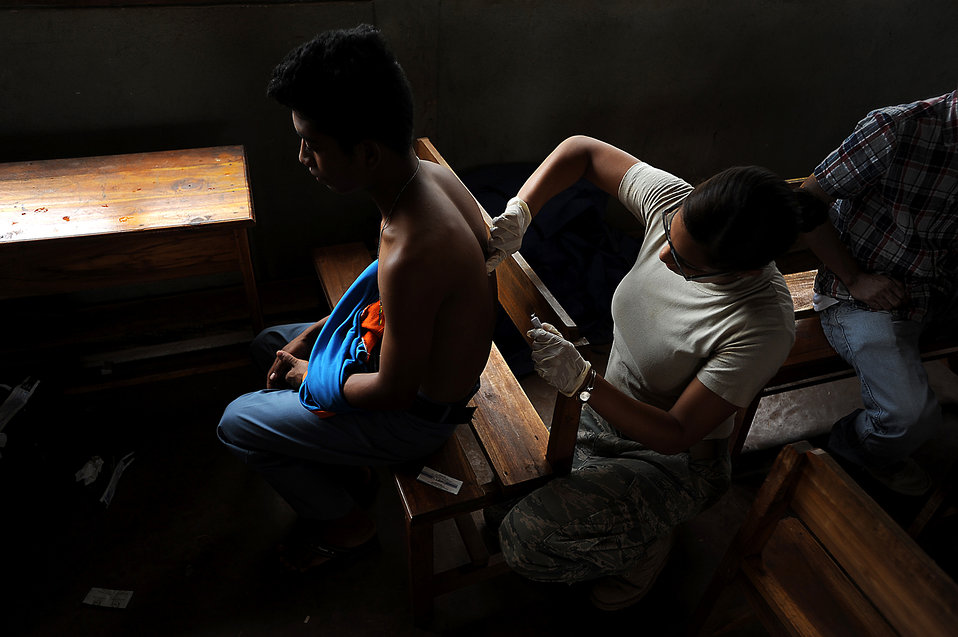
Healing touch

Tech. Sgt. Angela Quinones tends to a cut on a patient’s back Sept. 23, 2011, at Timor-Leste at Tri-Loca Primary School during Operation Pacific Angel in Baucau, Timor-Leste. Pacific Angel is a joint humanitarian and civic-military operation. Quinones is an independent duty medical technician with the 36th Airlift Squadron.